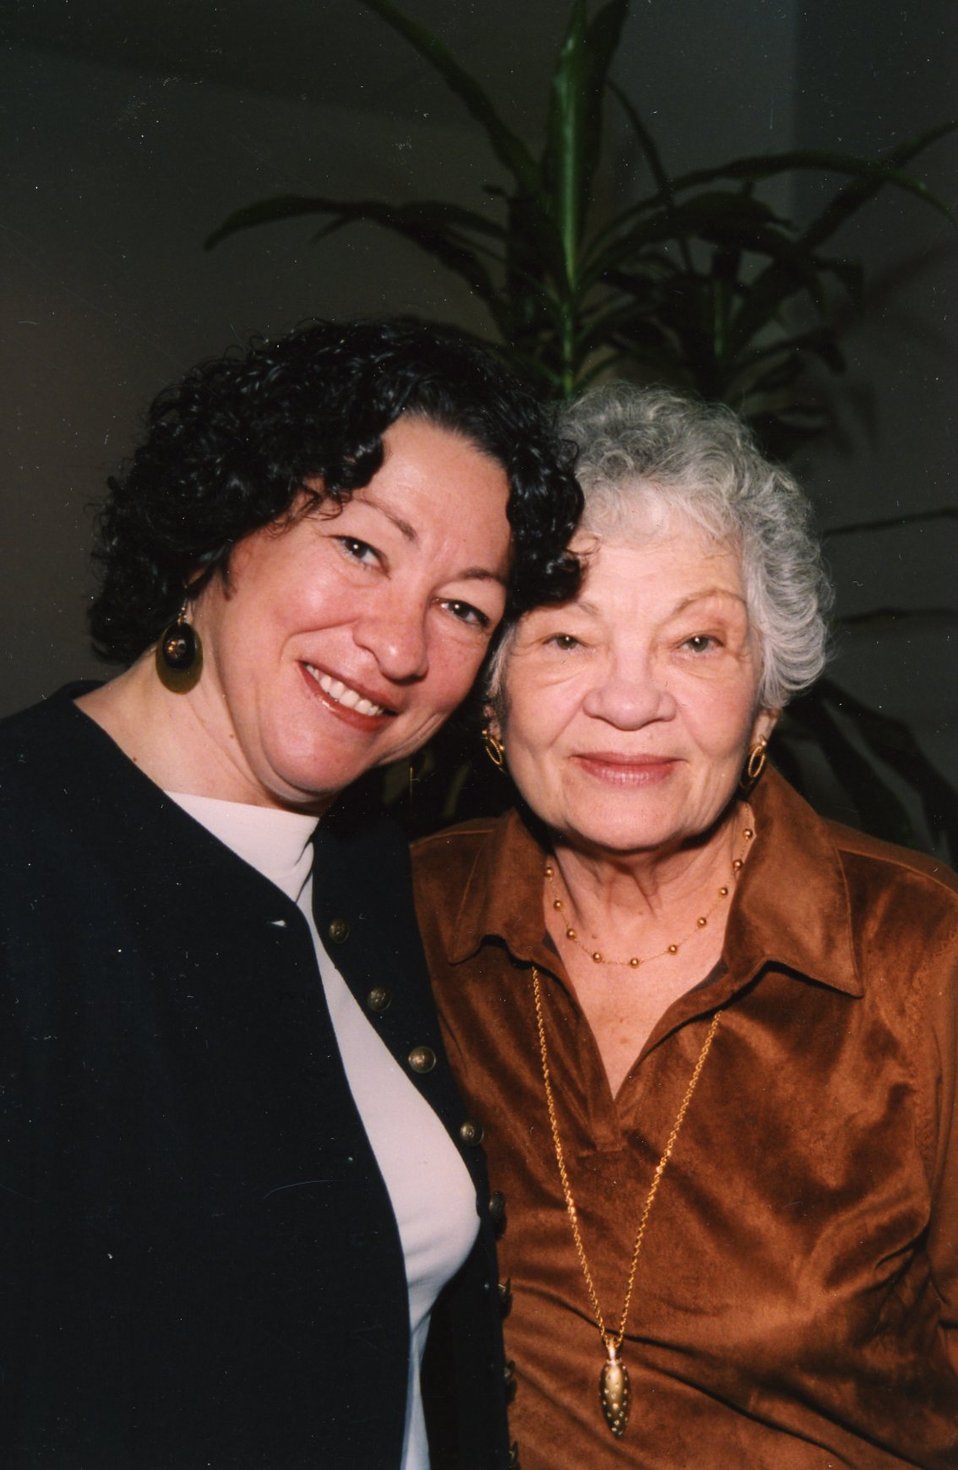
SSandMom 2

Judge Sonia Sotomayor with her mother, Celina Sotomayor.